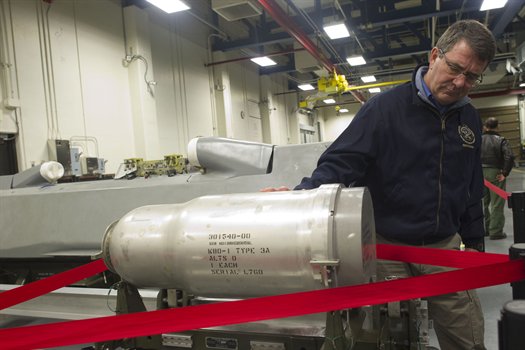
Deputy SecDef

Deputy Defense Secretary Ashton B. Carter tours a missile maintenance facility at Minot Air Force Base, N.D., Nov. 2, 2012.